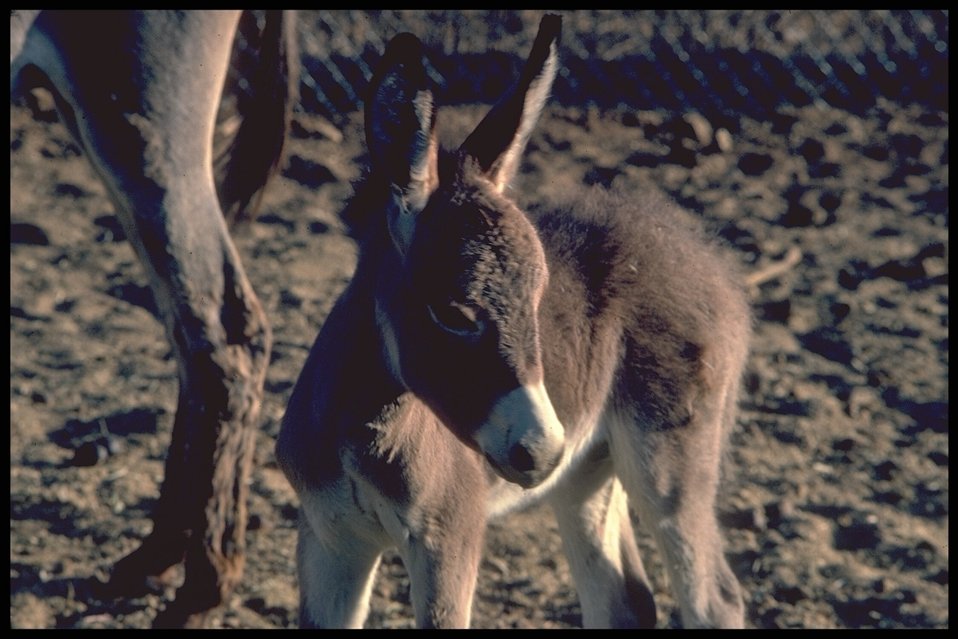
Wanted! Loving family with cozy corral. Clean environment requested. Will relocate. Capable of carring own baggage long distances. Good listener. Meet me, or my brother, at the next wild horse and burro adoption.